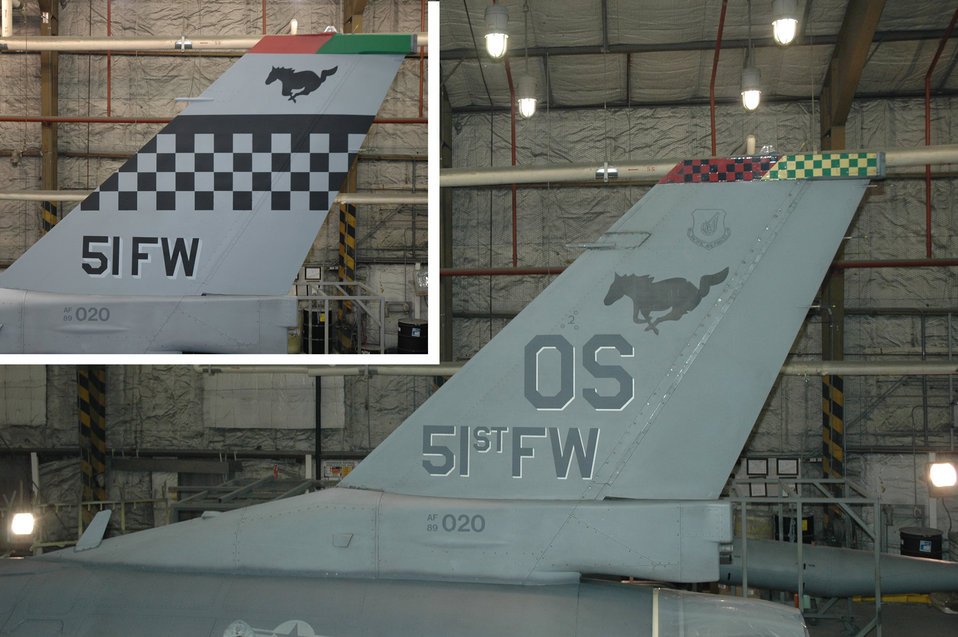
51st FW heritage tail flash

The old tail marking for the 51st Fighter Wing at Osan Air Base, South Korea with the new heritage tailflash with the